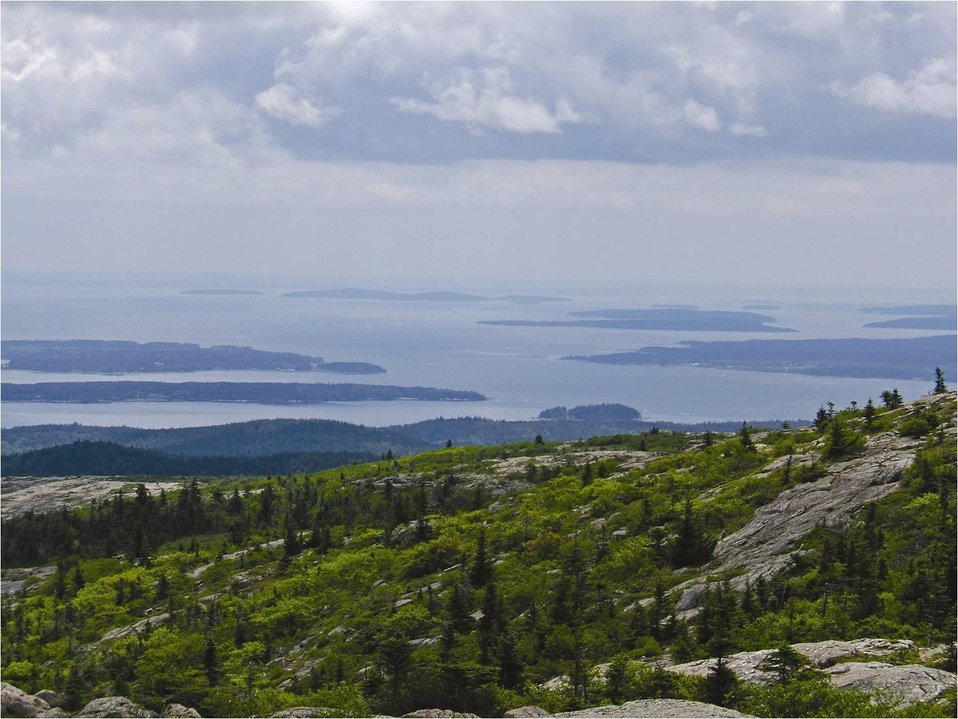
Acadia National Park, Maine